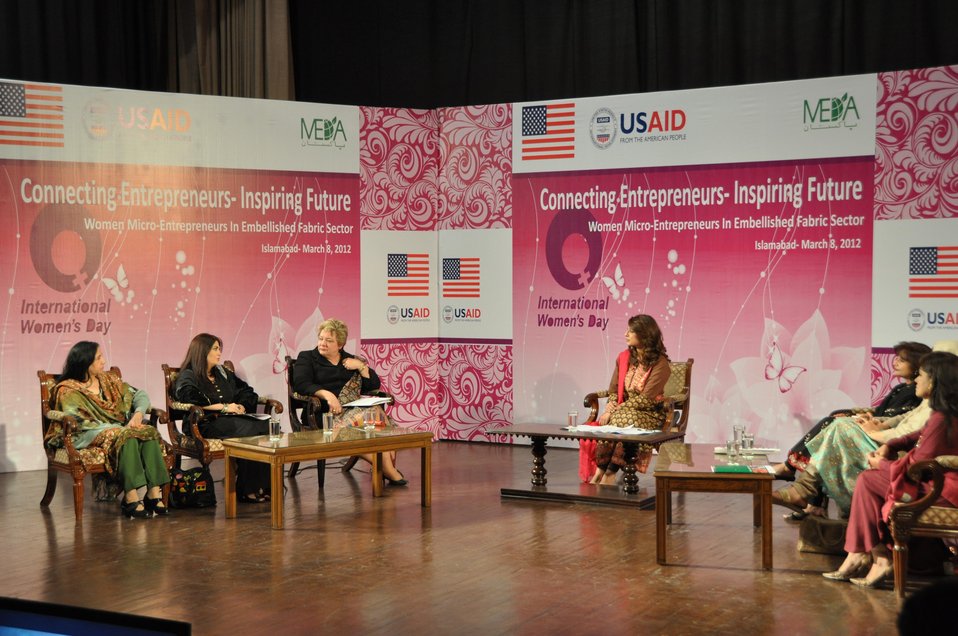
International Women’s Day

Islamabad, March 08, 2012 - The United States Agency for International Development (USAID) celebrated International Women’s Day, hosting a panel discussion with women entrepreneurs.
Panel members in addition to USAID’s
- Karen Freeman
- Wajeeha Nasreen, Sr. Product Development Manager, Gul Ahmed (famous Pakistani fabric brand)
- Dr. Nosheen, CEO, Generations (famous clothing brand)
- Razia Zubairi, Director General, Technical Education and Vocational Training Authority, Punjab
- Shaheen Khan, Sales Agent, ECDI, USAID sub-grantee